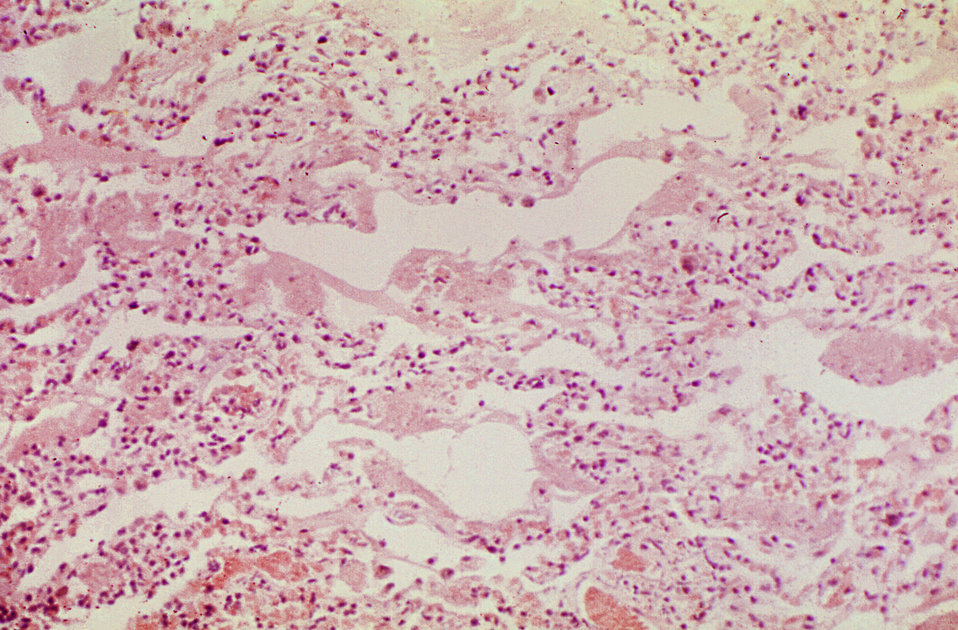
This hematoxylin-eosin stained (H&E) stained photomicrograph revealed some of the histopathologic changes associated with this Bacillus anthracis bacterial infection.